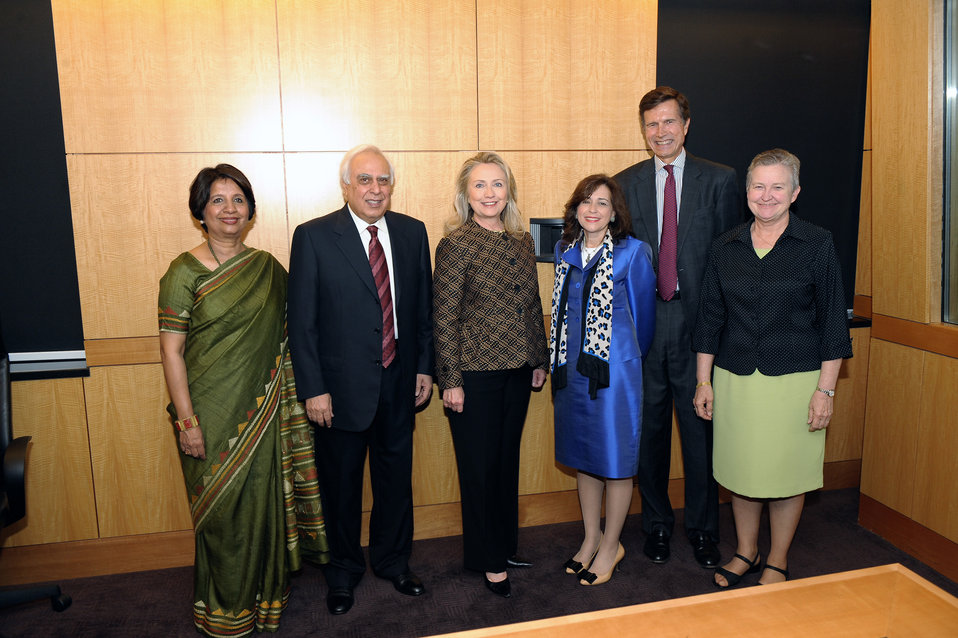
Secretary Clinton Poses for a Photo With Indian Ambassador to the U.S. Rao, Indian Minister for Human Resource Development Sibal,Under Secretary Sonenshine, Assistant Secretary Blake, and U.S. Ambassador to India Powell

U.S. Secretary of State Hillary Rodham Clinton poses for a photo with Indian Ambassador to the United States Nirupama Rao, Indian Minister for Human Resource Development Kapil Sibal, U.S. Department of State Under Secretary for Public Diplomacy and Public Affairs Tara D. Sonenshine, U.S. Department of State Assistant Secretary for South and Central Asian Affairs Robert O. Blake, Jr., and U.S. Ambassador to India Nancy Powell after her remarks at the U.S.-India Higher Education Summit at the George C. Marshall Center in Washington, D.C. on June 12, 2012.